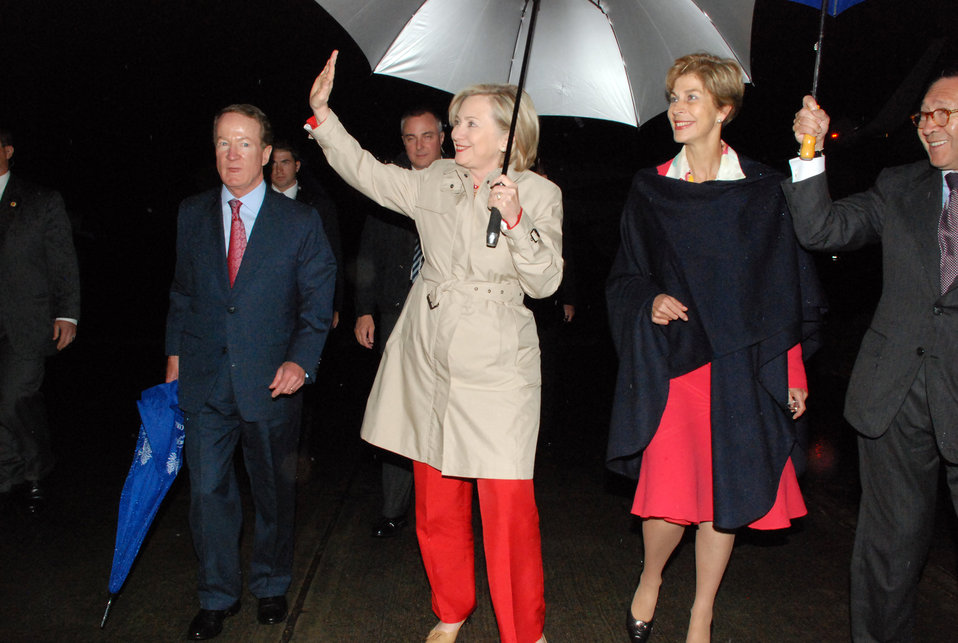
Secretary Clinton Arrives in Colombia

U.S. Secretary of State Hillary Rodham Clinton is accompanied by U.S. Ambassador to Colombia William R. Brownfield and Colombian Ambassador Carolina Barco as she arrives at CATAM airport in Bogotá Colombia June 8, 2010.